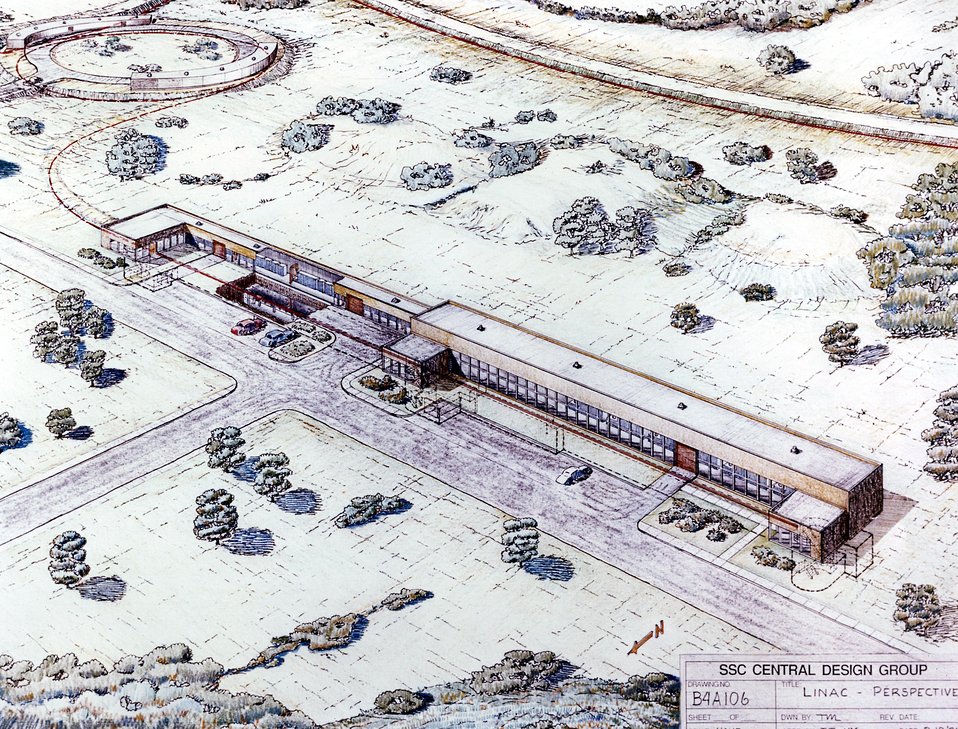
DRAWING OF SUPERCONDUCTING SUPER COLLIDER LINAC BUILDING.

THE SUPERCOLLIDER WILL BE A 54-MILE CIRCUMFERENCE, RACE-TRACK SHAPED TUNNEL THAT IS 12 FEET IN CROSS-SECTION DIAMETER. APPROXIMATELY 10,000 SUPERCONDUCTING MAGNETS WILL FOCUS AND GUIDE TWO BEAMS OF PROTONS IN OPPOSITE DIRECTIONS AROUND THE TUNNEL. THE BEAMS WILL BE BOOSTED TO NEARLY THE SPEED OF LIGHT AND ALLOWED TO COLLIDE HEAD-ON WITH AN ENERGY OF 40 TRILLION ELECTRON VOLTS. THE COLLISIONS WILL CREATE NEW SUBATOMIC PARTICLES THAT WILL BE DETECTED AND ANALYZED. THE SUPERCOLLIDER WILL BE A UNIQUE BASIC RESEARCH TOOL FOR HIGH ENERGY PHYSICS, THE SCIENCE THAT STUDIES THE FUNDAMENTAL NATURE OF MATTER AND ENERGY.